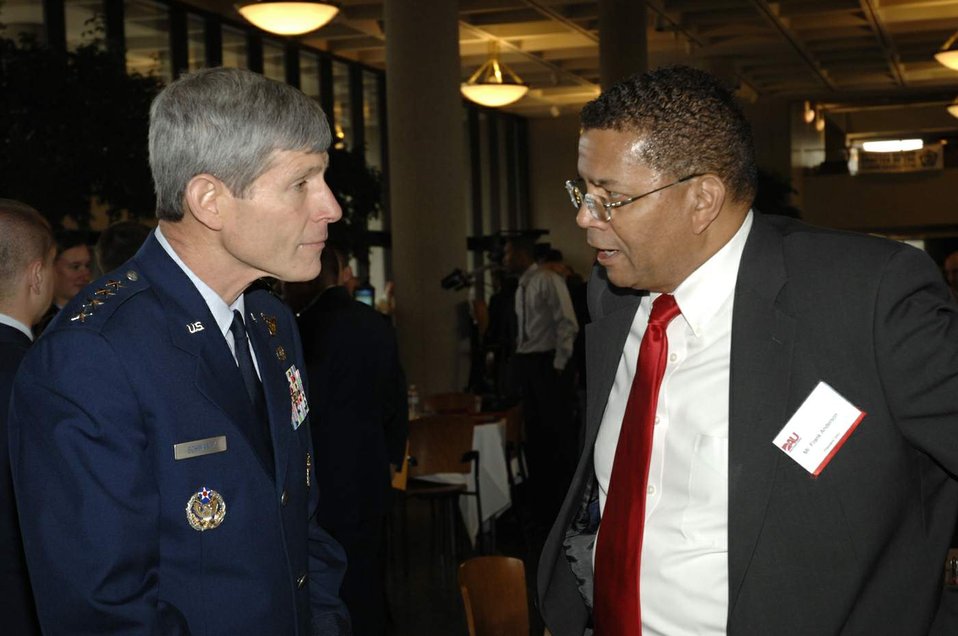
CSAF at acquisition conference

Mr. Frank Anderson, president of Defense Acquisition University, chats with Gen. Norton Schwartz, Air Force chief of staff, April 21 during DOD Acquisition Insight Days at Sinclair Community College in Dayton, Ohio. The event featured workshops, training and a forum for Air Force acquisition professionals to discuss the latest regulatory changes and ideas for speeding the delivery of new capabilities for joint warfighters.